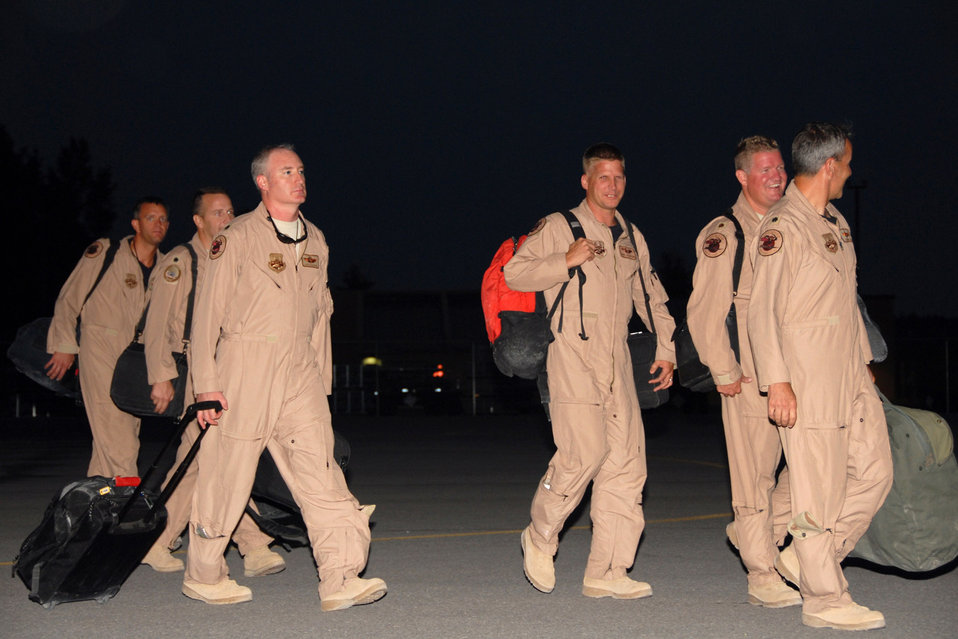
Arriving home!

Pilots with the 174th Fighter Wing at Hancock Field, N.Y., return home Aug. 5 from their final combat deployment in support of Operation Iraqi Freedom. The unit dispatched 14 F-16 Fighting Falcons to Iraq on June 10. This was the last deployment for the unit using the F-16s. They will begin transitioning to the MQ-9 Reaper this fall.